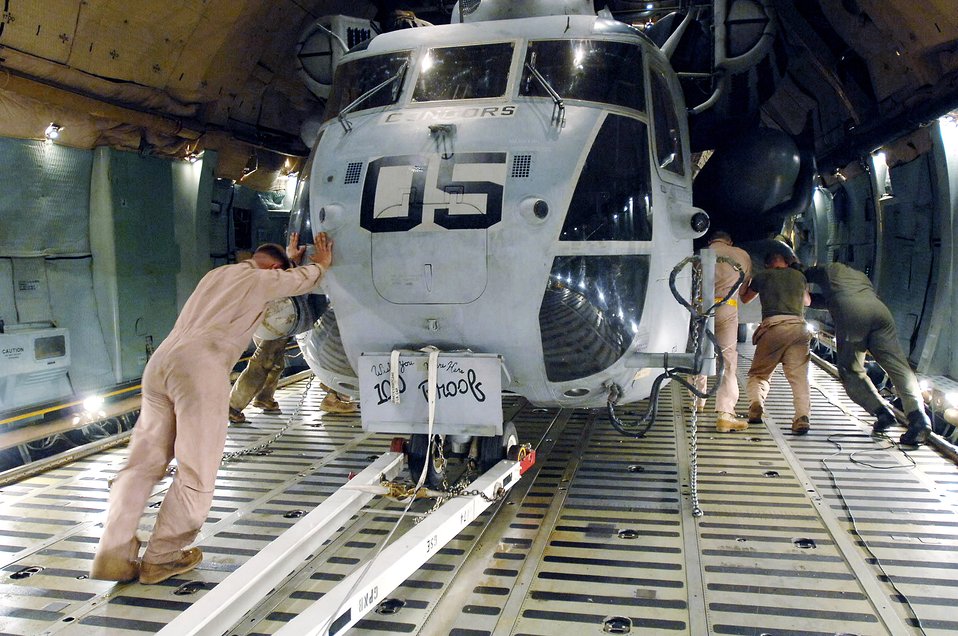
Air National Guard crew flies its 1st C-5 to Djibouti

Crews remove the last of two Marine CH-53E Super Stallion helicopters from a C-5 Galaxy April 10 in Djibouti, Africa. The Galaxy's overseas journey was a first for the West Virginia Air National Guard's 167th Airlift Wing, a unit that recently gained the massive airframe capable of transporting oversized cargo to any theater of combat on the globe.